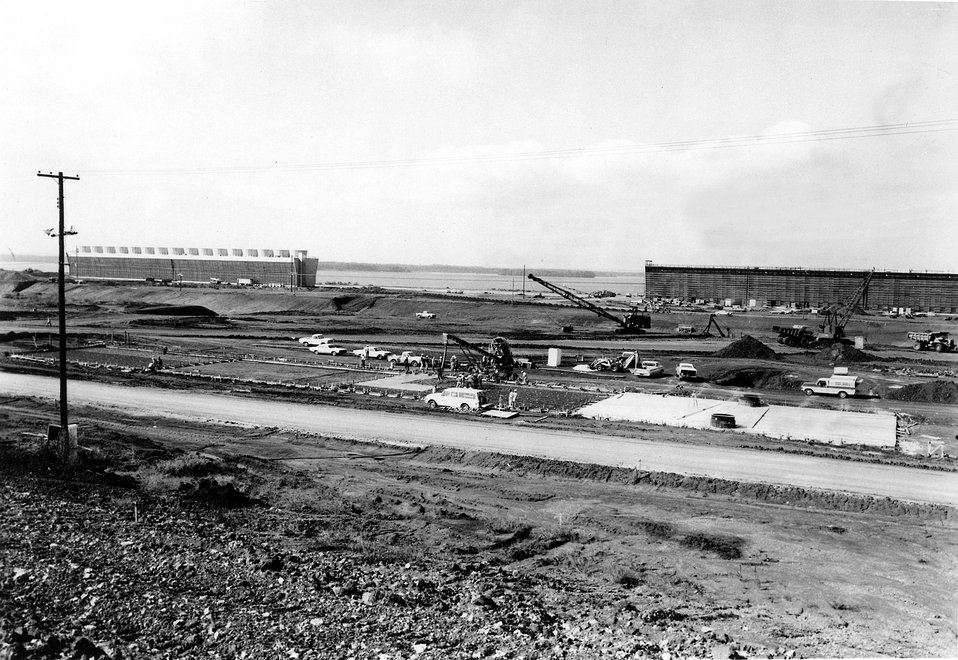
Six forced-draft cooling towers are required for the Tennessee Valley Authority's 3-unit Browns Ferry Station -- 2 towers for each unit. c. 1974